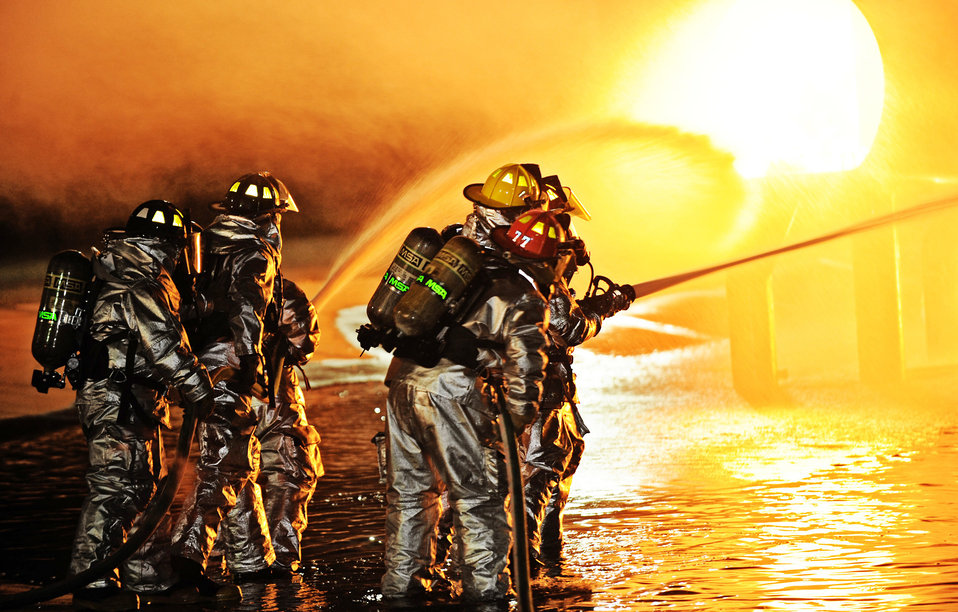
The heat is on...

Firefighters from the 375th Civil Engineer Squadron demonstrate the proper use of the buddy system when fighting fires Oct. 4, 2010, at Scott Air Force Base, Ill. In honor of Fire Safety Awareness Week, the Scott AFB Fire Department provided fire safety awareness education and training.